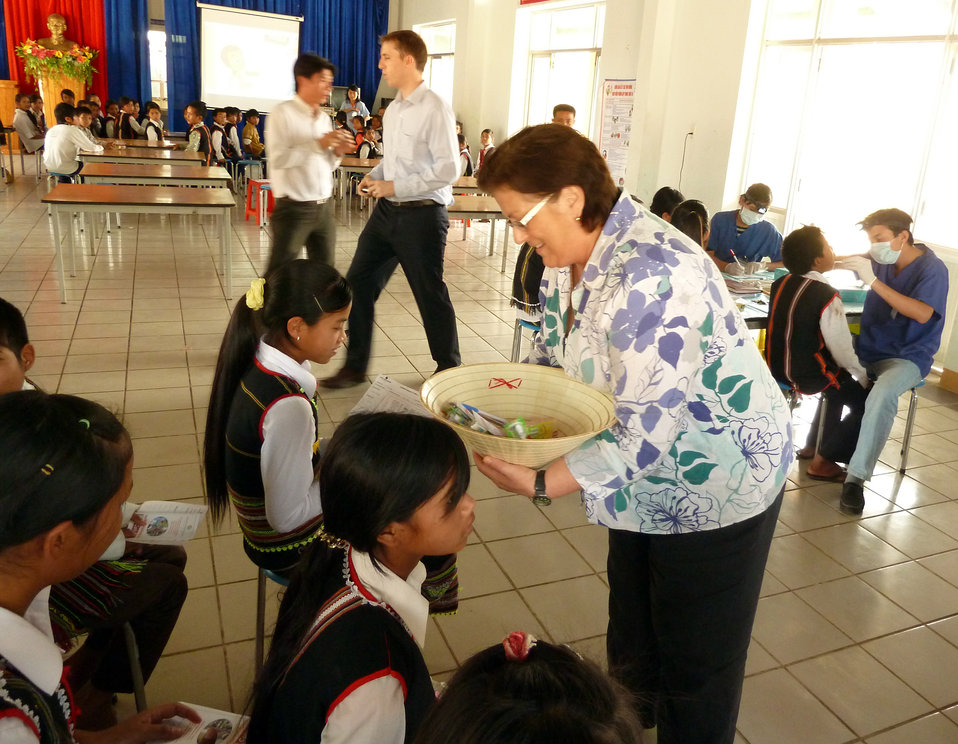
U.S. Deputy Chief of Mission Claire Pierangelo distributes toothbrushes and toothpaste at a dental screening at Kon Ray school